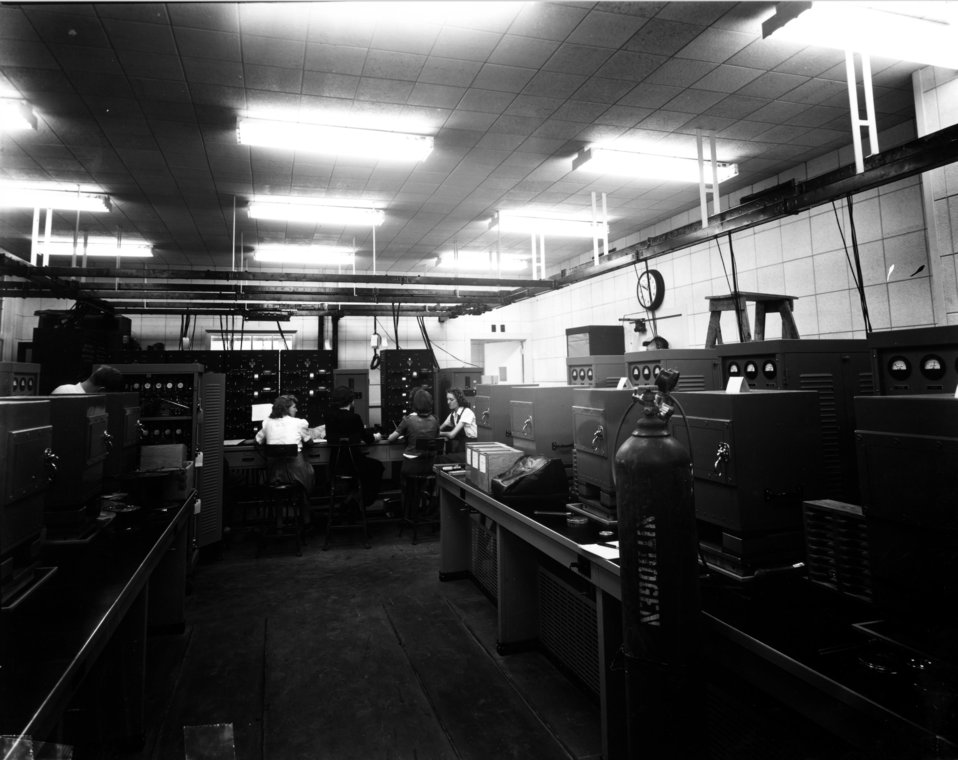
K-25 at Oak Ridge